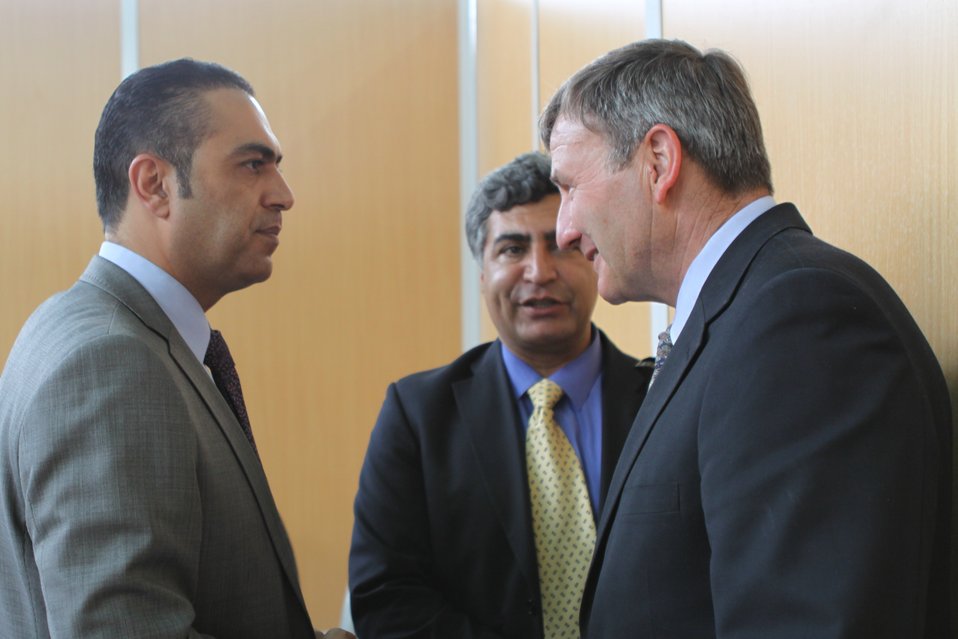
100525 Hirat Marble Conference 554